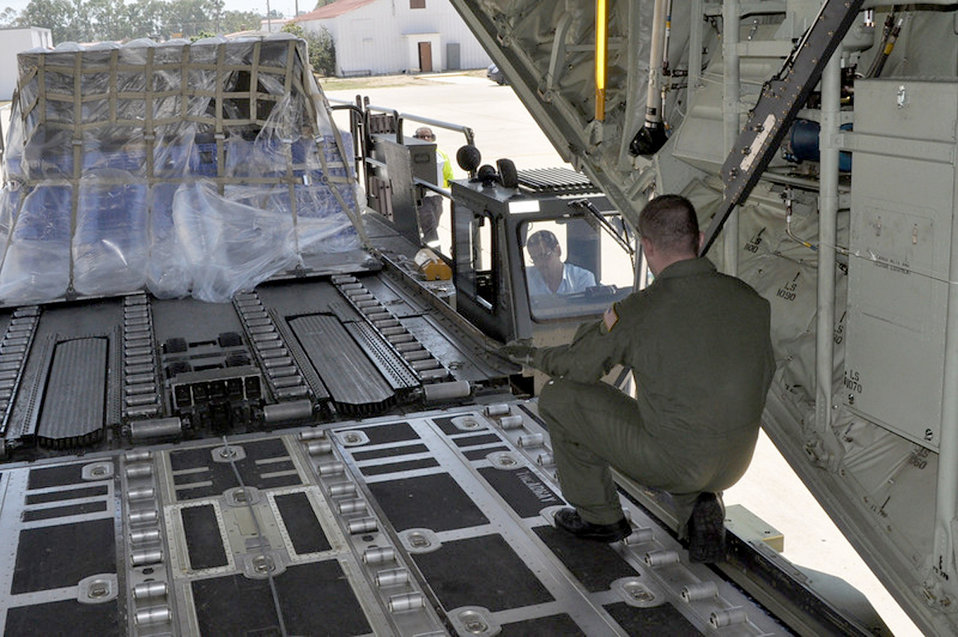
Ramstein Airmen, C-130s deliver supplies to Russia

Senior Airman Steve Baird III guides a tractor carrying pallets of firefighting equipment on to a C-130J Super Hercules Aug. 12, 2010, at Naval Station Rota, Spain. NAVSTA Rota sent nearly $20,000 of equipment to help Russia control and extinguish wildfires, save lives, homes, infrastructure, and natural resources. Airman Baird is a loadmaster from the 37th Airlift Squadron at Ramstein Air Base, Germany.